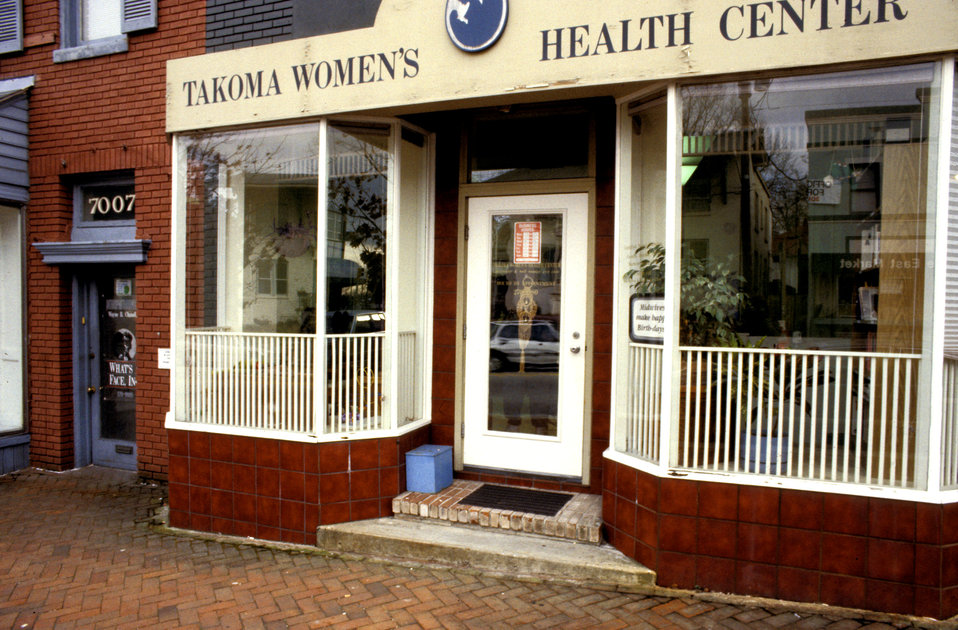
Pictured here in this 1993 image was the front of a women's clinic revealing that the front door was accessed via a two-step stoop, making accessibility an issue for individuals having problems with mobility such as crutches, or as seen in PHIL # 9019 - 9026, while using a wheelchair. In PHIL 9022 - 9026, a temporary plywood ramp had been installed. Even though the temporary ramp installation made access easier for the mobility-challenged, it was constructed in such a way as to make it a dangerous, though short-term solution. PHIL images 9027 - 9029 depicted a long-term, permanent solution using a brick, concrete, and metal ramp. It was not the perfect solution, for it lacked adequate maneuvering room near the clinic doorway. It also clearly appeared as an add-on, or after-the-fact solution that protruded into the wide sidewalk, while attempting to blend in with the existing buildings by using brick, colored concrete, and wrought iron rails. Stairs had also been provided.